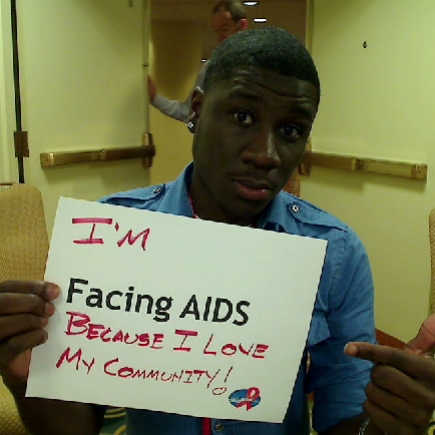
I'm Facing AIDS because I love my community!